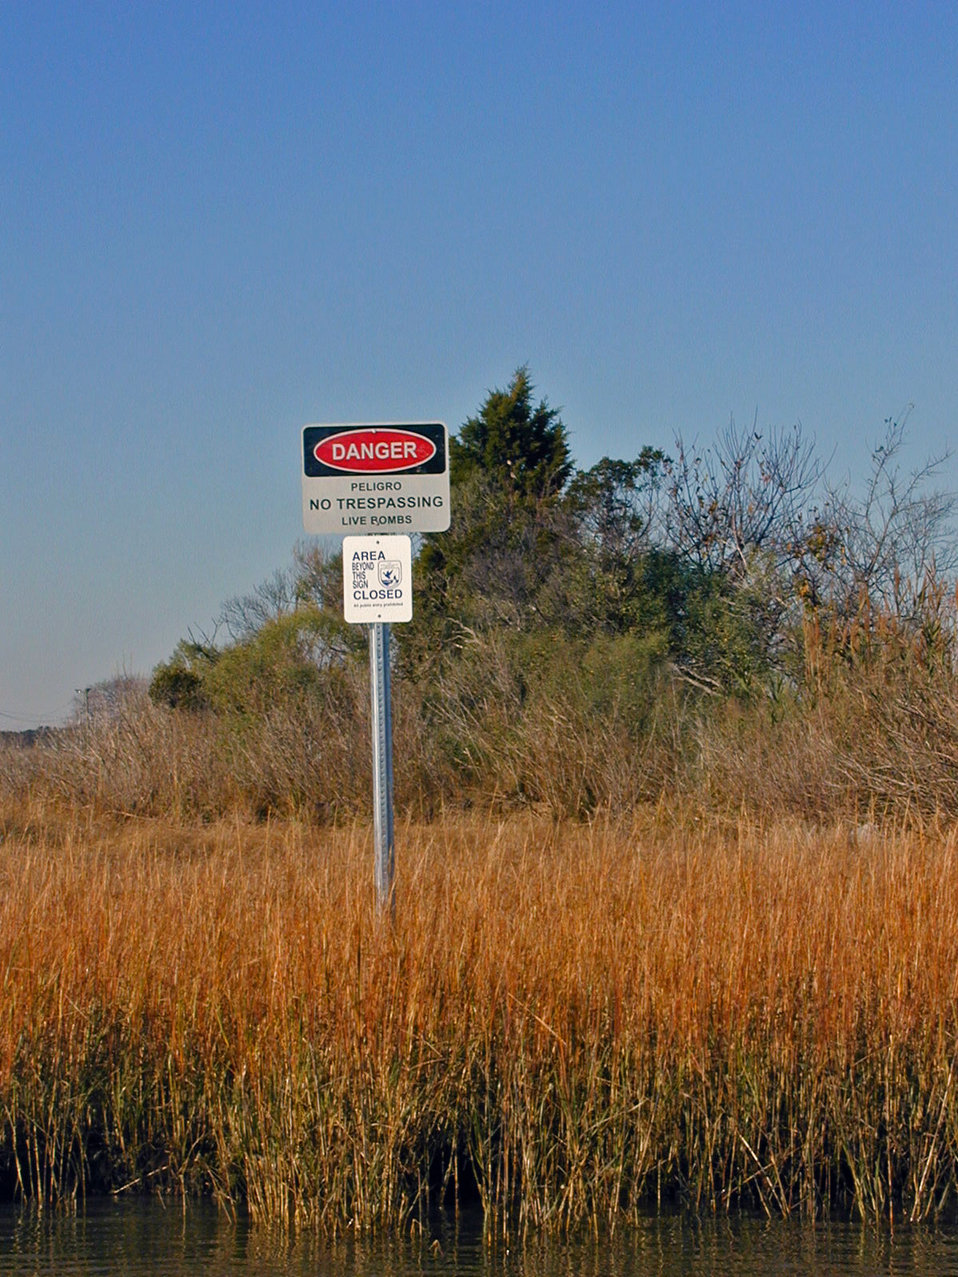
Warning sign

Plum Tree Island National Wildlife Refuge is closed to the public due to unexploded ordinance throughout the refuge.